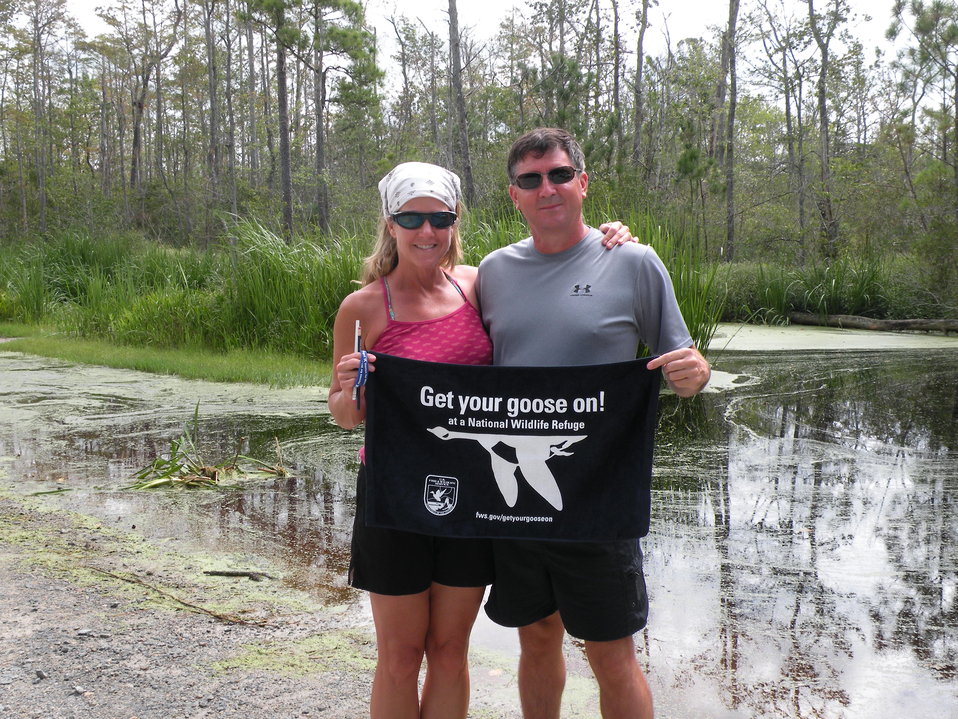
Get Your Goose On!

A couple Gets Their Goose On! while visiting the paddling trail at ARNWR.

Ashlyn Knight/USFWS